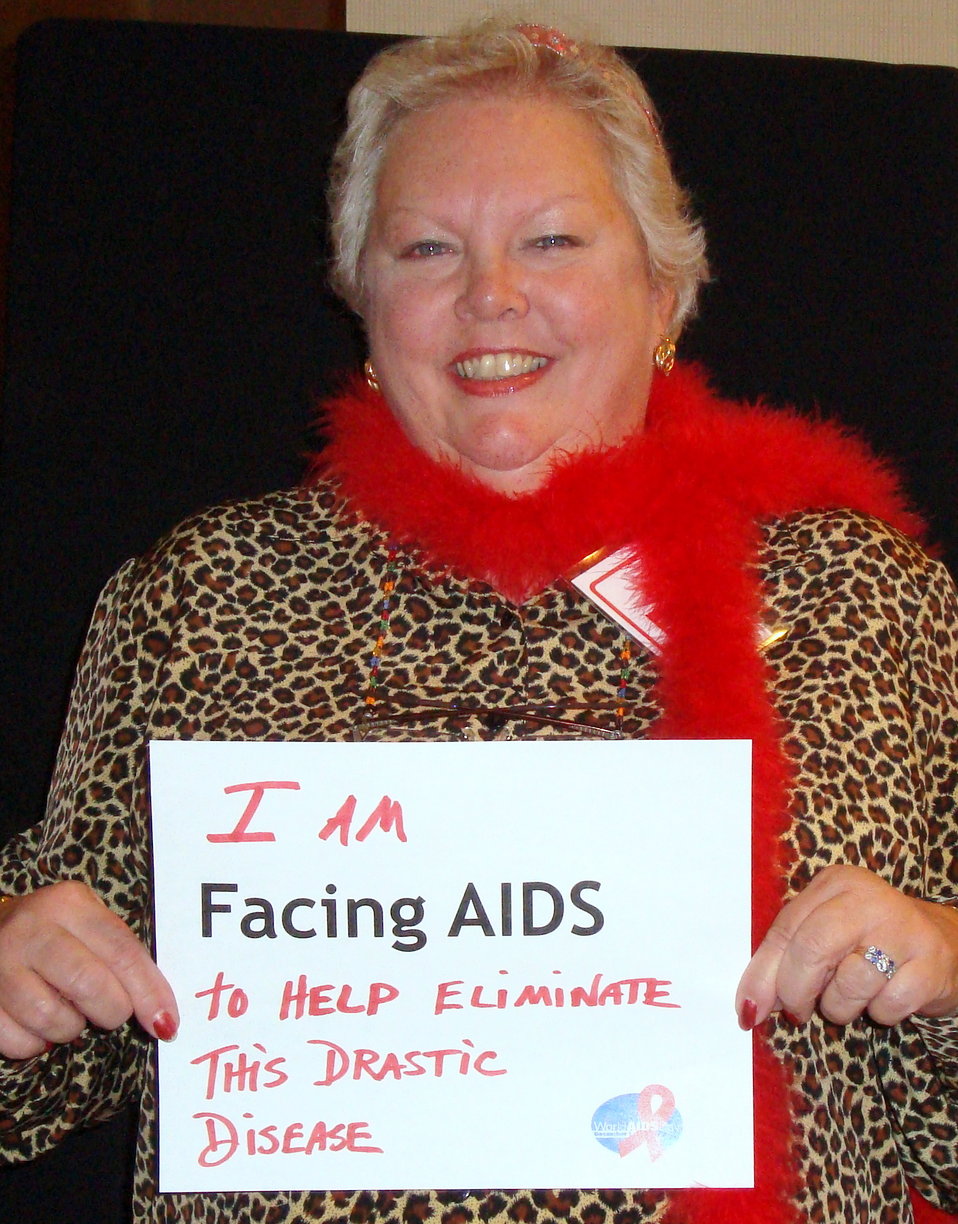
FacingAIDSCampaign 011